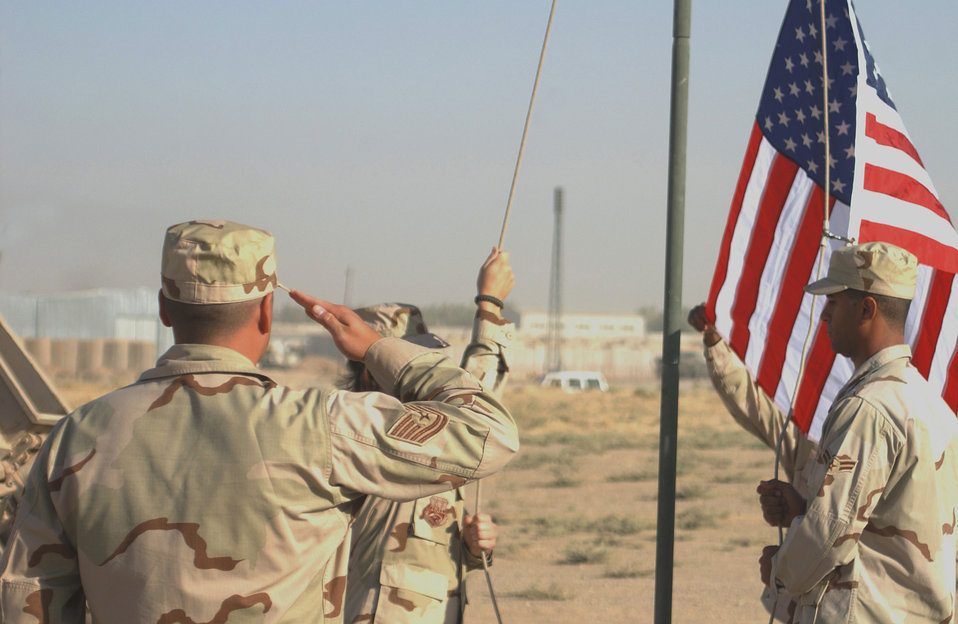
Raising the flag

KIRKUK AIR BASE, Iraq -- Tech. Sgt. Jessie Castillo salutes as other members of the detail raises the American flag during a Sept. 11 remembrance ceremony here.